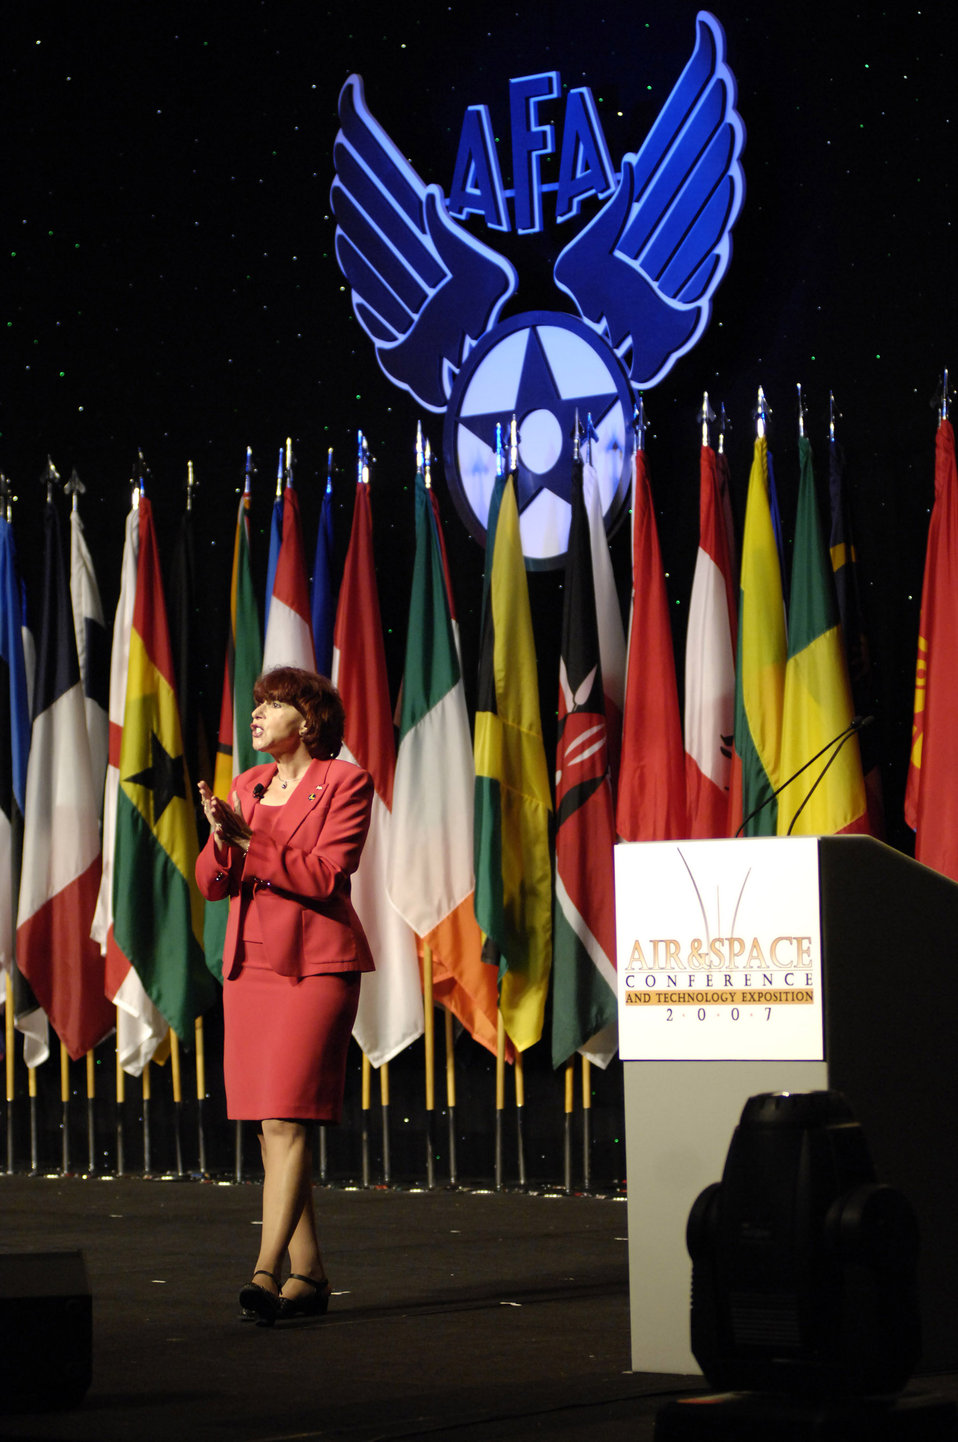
Cyberspace expert briefs AFA conference attendees

Dr. Lani Kass speaks at the Air Force Association's 2007 Air & Space Conference and Technology Exposition Sept. 26 in Washington. Ms. Kass briefed attendees about the importance of cyberspace and the role it plays in our national defense strategy. Ms. Kass is a special assistant to the chief of staff of the Air Force.